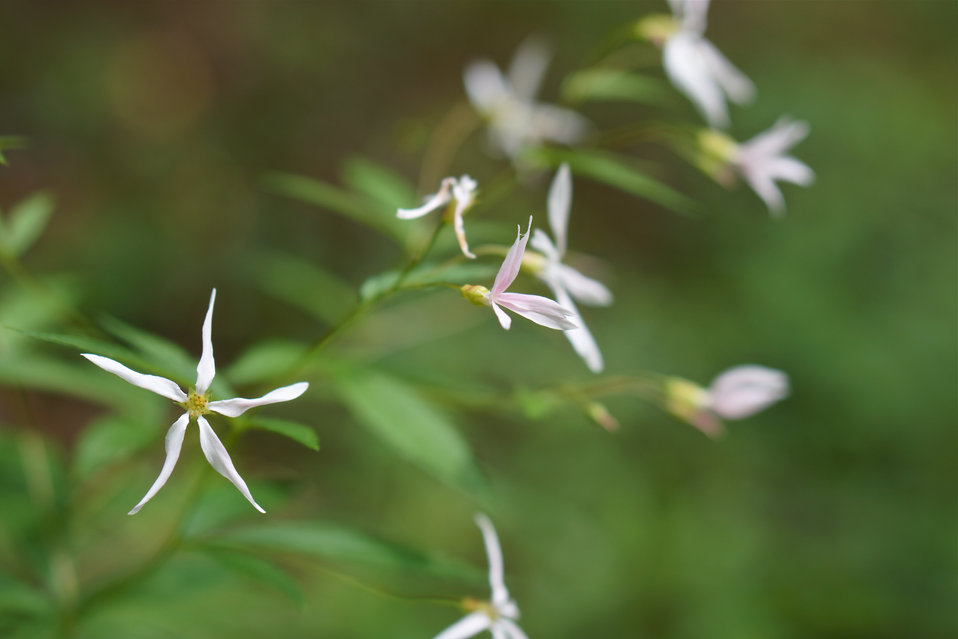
Roadside flowers

In May, bog conservationists from Tennessee, North Carolina, and Georgia convened in the north Georgia mountains for the spring, 2014 meeting of the Bog Learning Network. The event provided an opportunity for biologists to see, first hand, the result of management efforts at two north Georgia bogs. More importantly, the outings provided an opportunity to share innovative approaches to bog management, such as the role of the Georgia Plant Conservation Alliance in conserving rare plants and coordinating a cadre of volunteers to work on bog management.

The Bog Learning Network was convened in the winter of 2013 as a way to bring together people working for bog conservation across the Southern Appalachians. Southern Appalachian bogs are one of North America’s rarest habitats and home to many rare plants and animals.